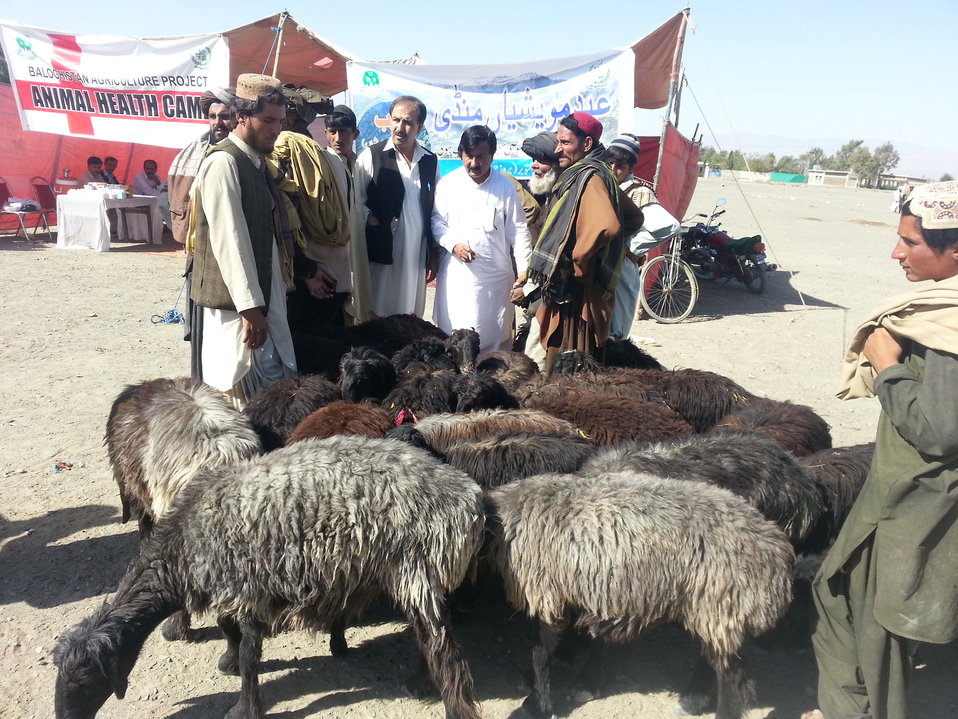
Livestock for sale